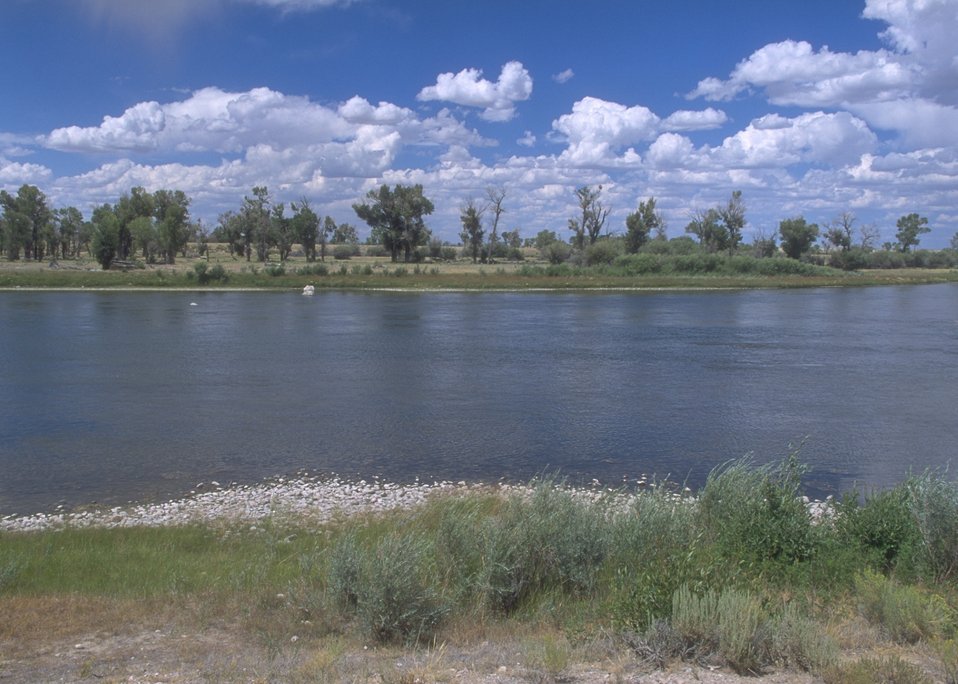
Lombard Ferry Crossing site along the Oregon & Mormon Trail on the Green River, Rock Springs Field Office.